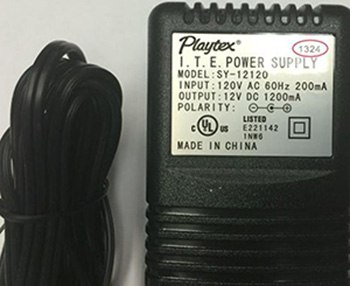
RECALLED – AC/DC power adapters used with breast pum

March 18, 2014 – Product Recall – Playtex Announces the Voluntary Nationwide Recall of Certain AC/DC Power Adapters Used With the Playtex® Nurser Deluxe Double Electric Breast Pump Due to Potential for Electric Shock.